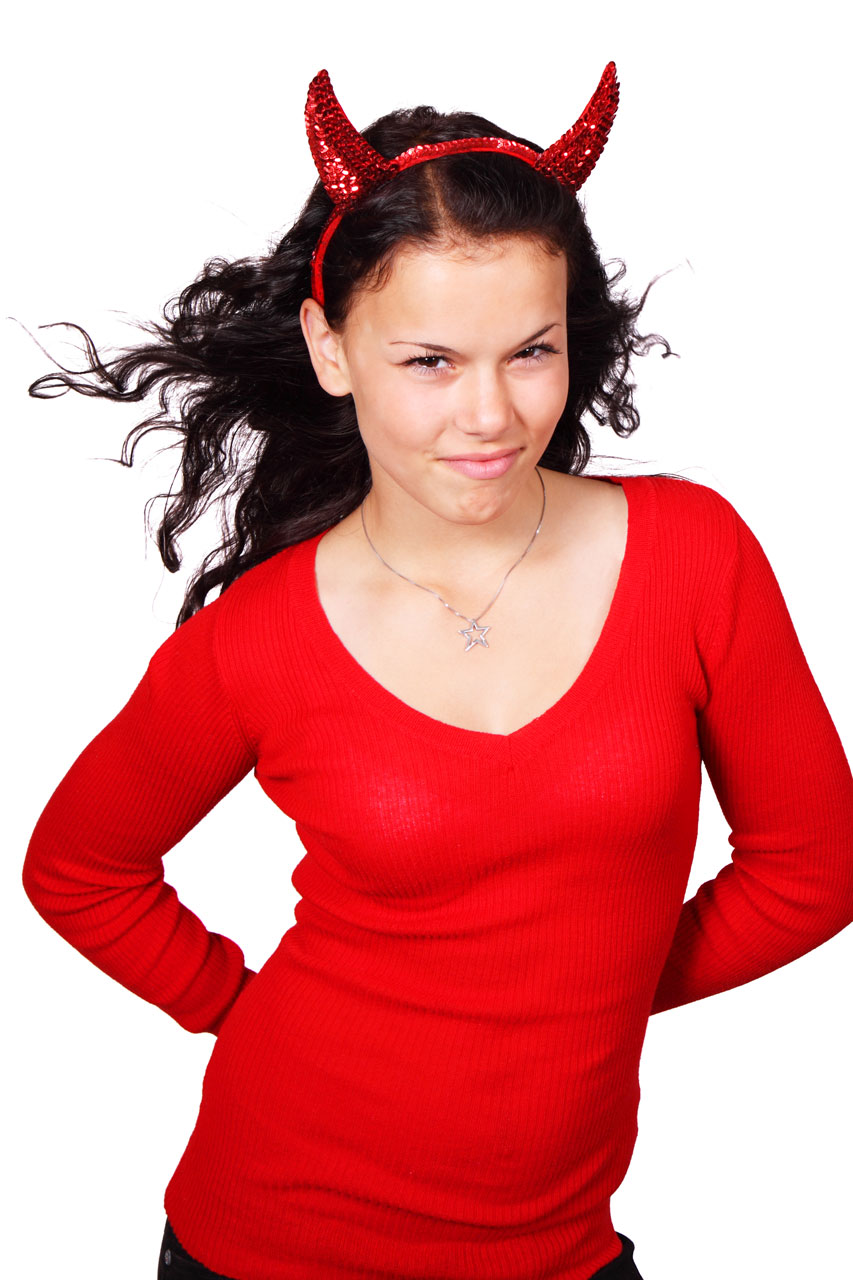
Angry devil

Angry female devil isolated on white background.